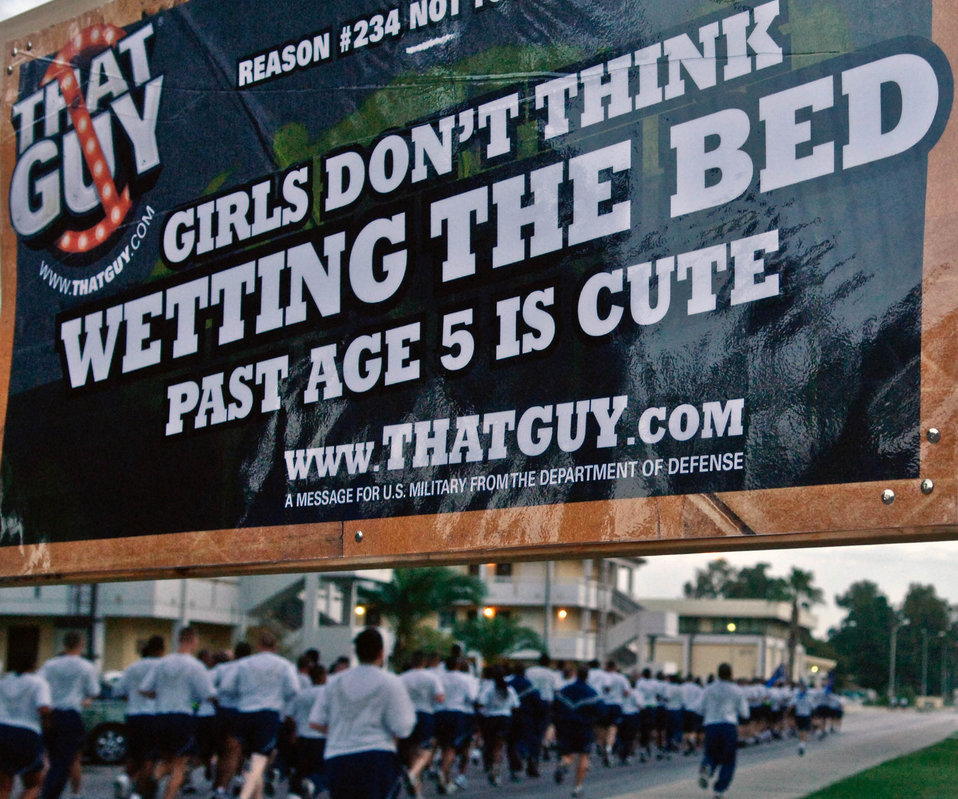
That Guy PB

Incirlik Airmen participate in the monthly wing run to promote the That Guy campaign Oct. 29, 2010 at Incirlik Air Base, Turkey. That Guy campaign has two goals: to reduce alcohol abuse and to raise awareness of the negative short-term social consequences of excessive drinking to young servicemembers.